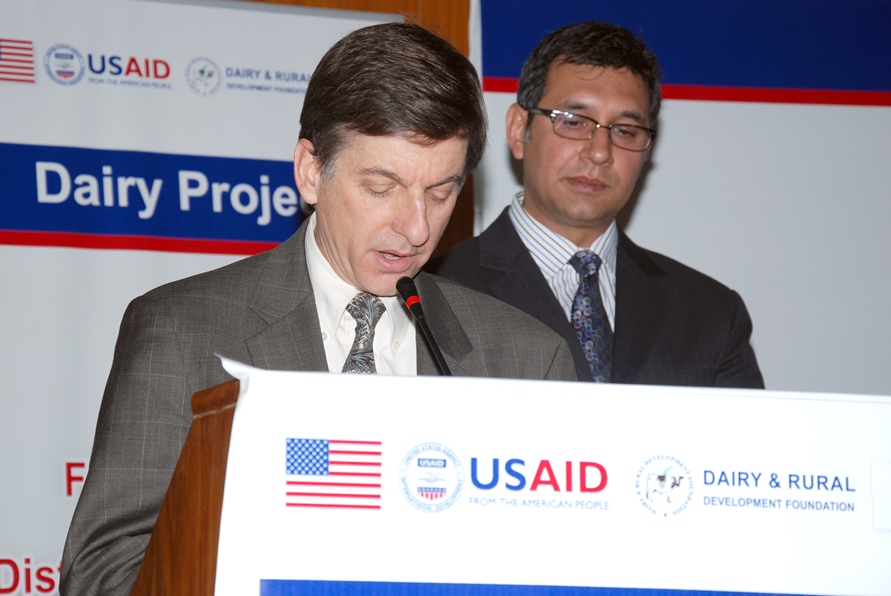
USAID Mission Director Dr. Andrew Sisson addressing the successful AI technicians